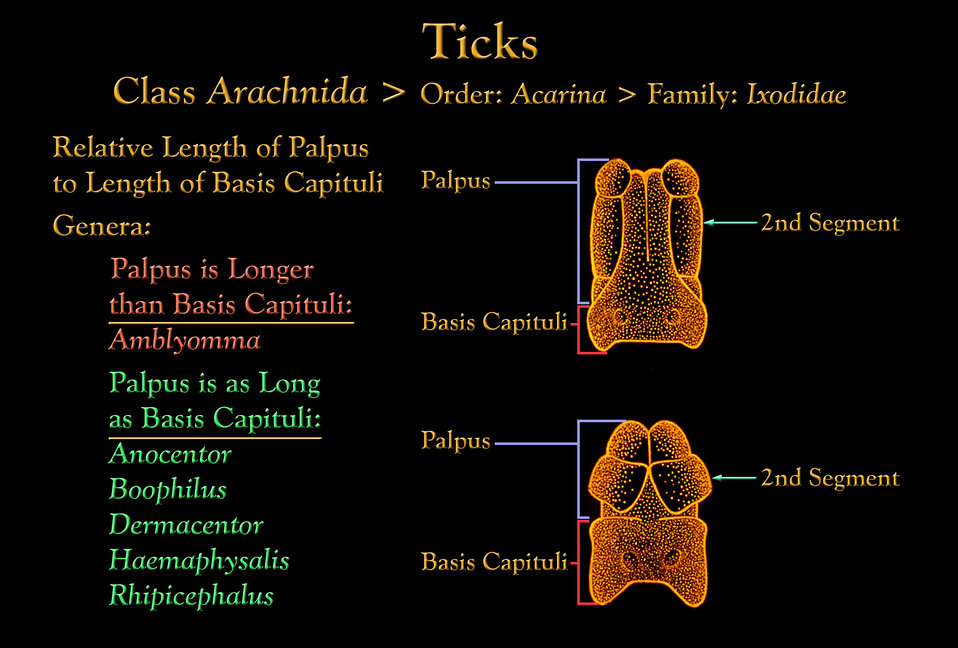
This drawing depicts the relationship between the palpus and the basis capituli amongst various genera of Ixodidae ticks.